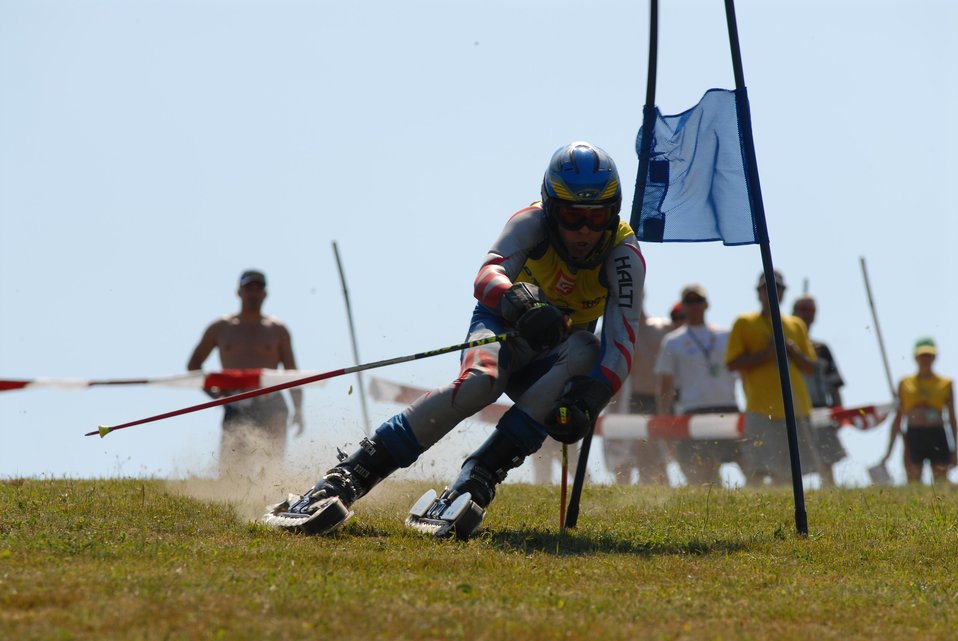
Čeština: MSJ Opava